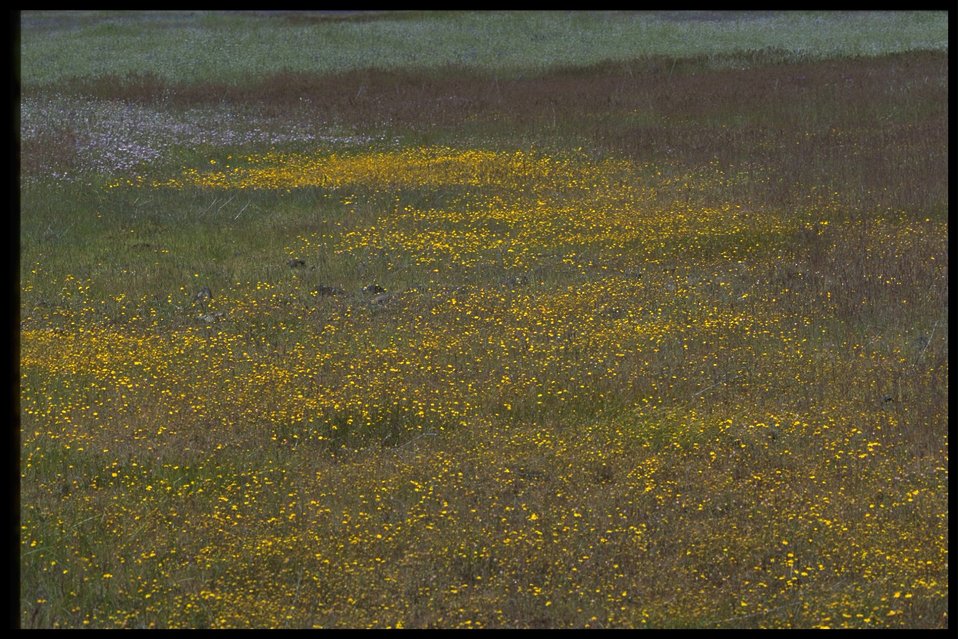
Farshot of Lasthenia californica.